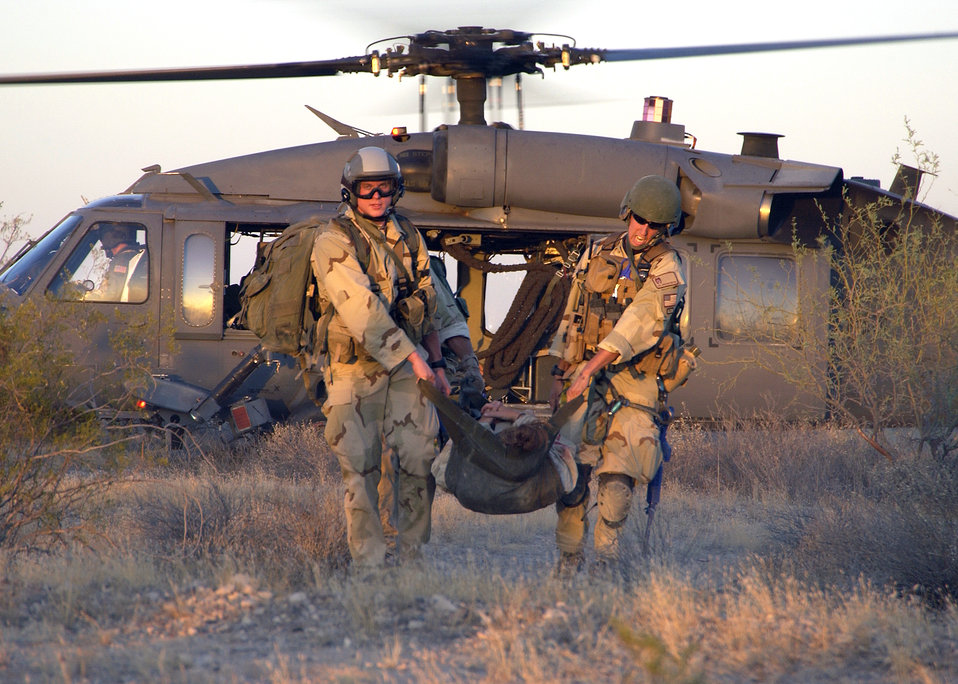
Timely response

Pararescuemen from the 48th Rescue Squadron at Davis-Monthan Air Force Base, Ariz., transport a simulated patient onto an HH-60 Pave Hawk at Gila Bend Auxiliary Air Field, Ariz., on Tuesday, May 30, 2006. The scenario involved a simulated plane crash with 20 survivors and was part of a major accident response exercise. Pararescuemen were evaluated on their initial on-scene assessment, treatment and response time.